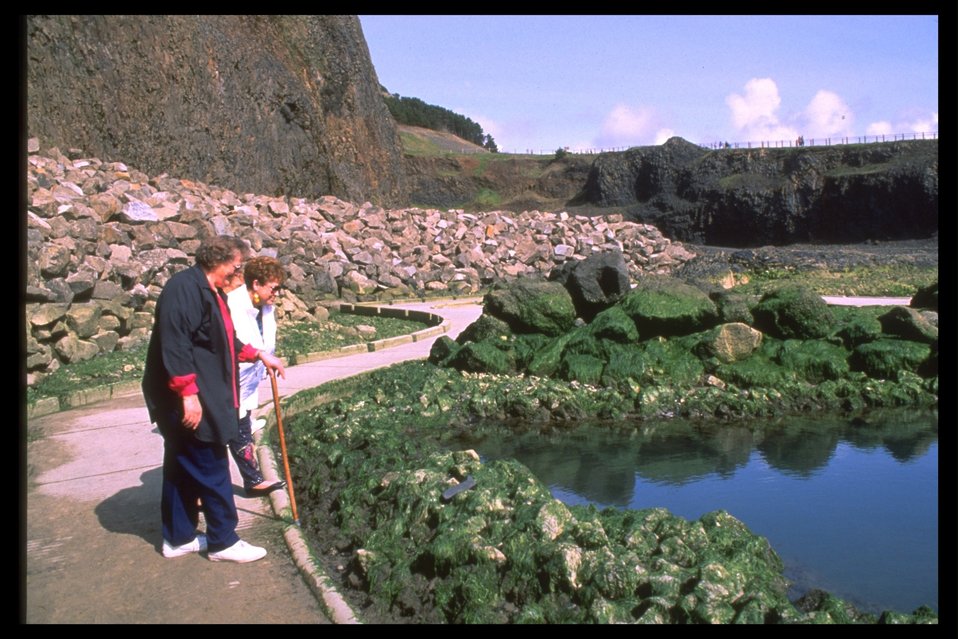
A woman with a walking cane along the Quarry Cove tidepools.